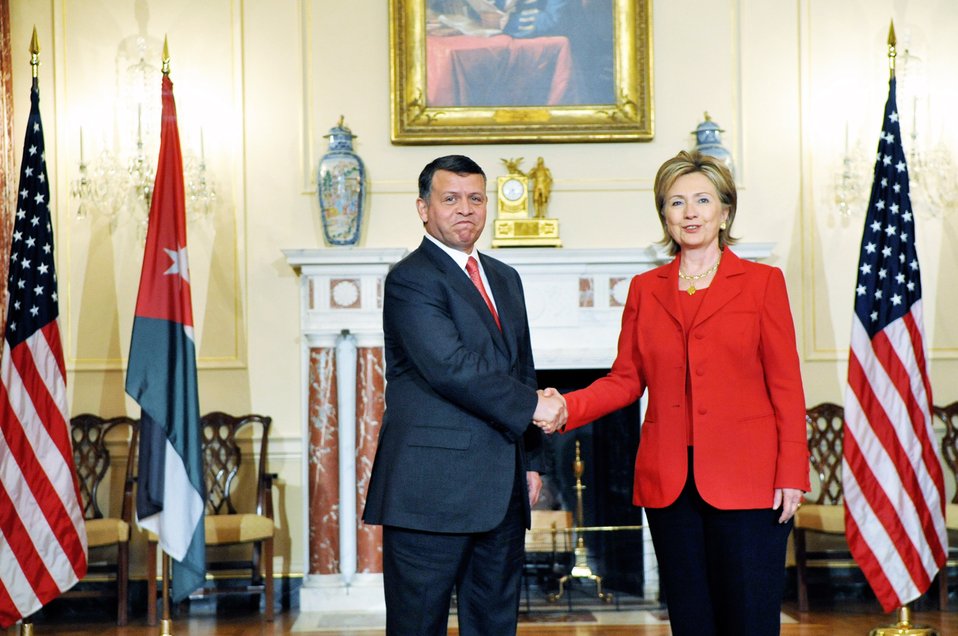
Secretary Clinton Meets With King of Jordan

U.S. Secretary of State Hillary Rodham Clinton meets with King Abdullah II of Jordan at the U.S. Department of State in Washington, DC April 21, 2009.